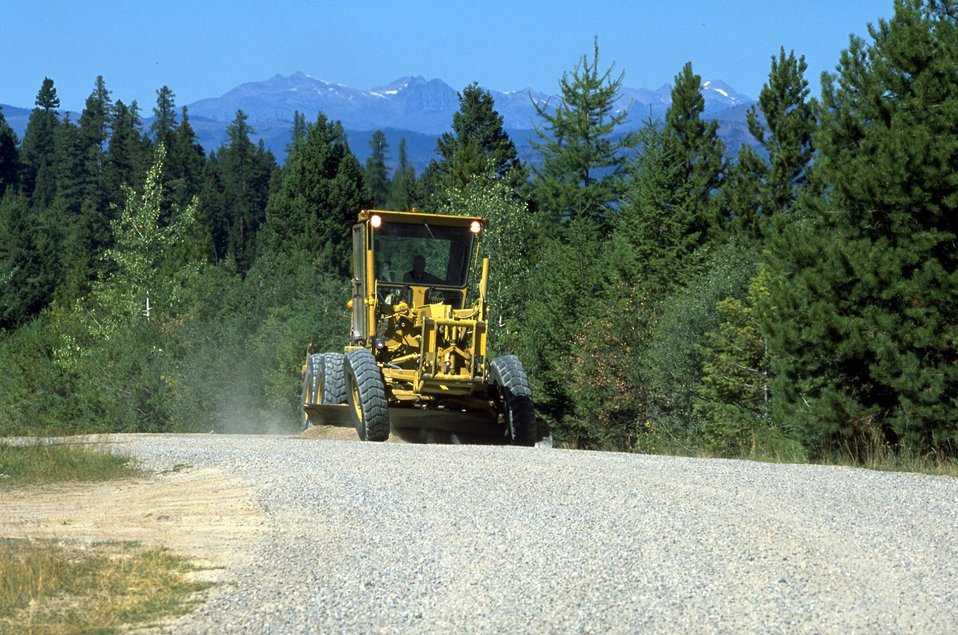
Garnet Back Country Byway--road maintenance work